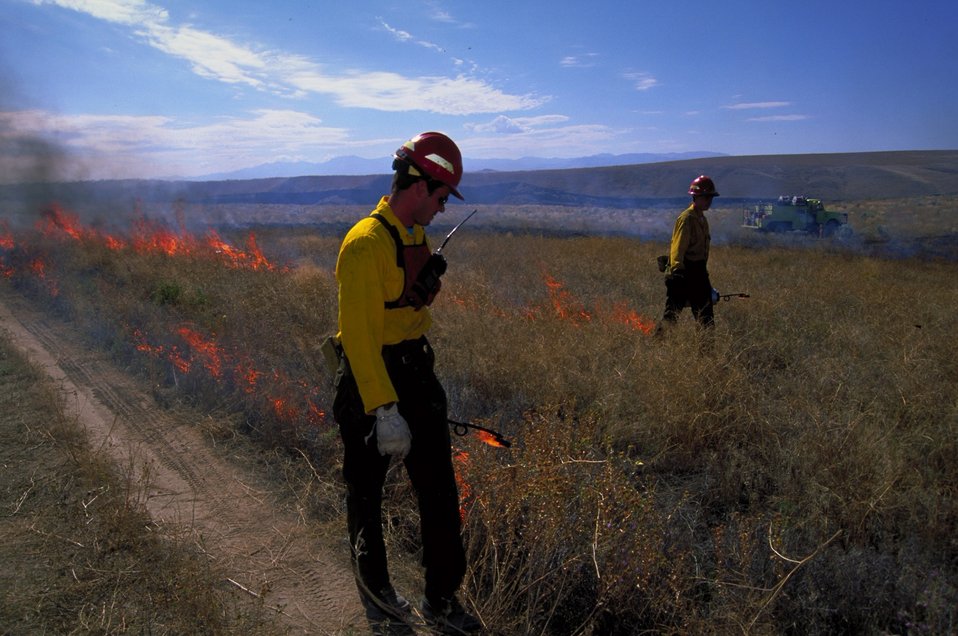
Prescribed burn Fire Season 2000 Lower Snake River District LSRD